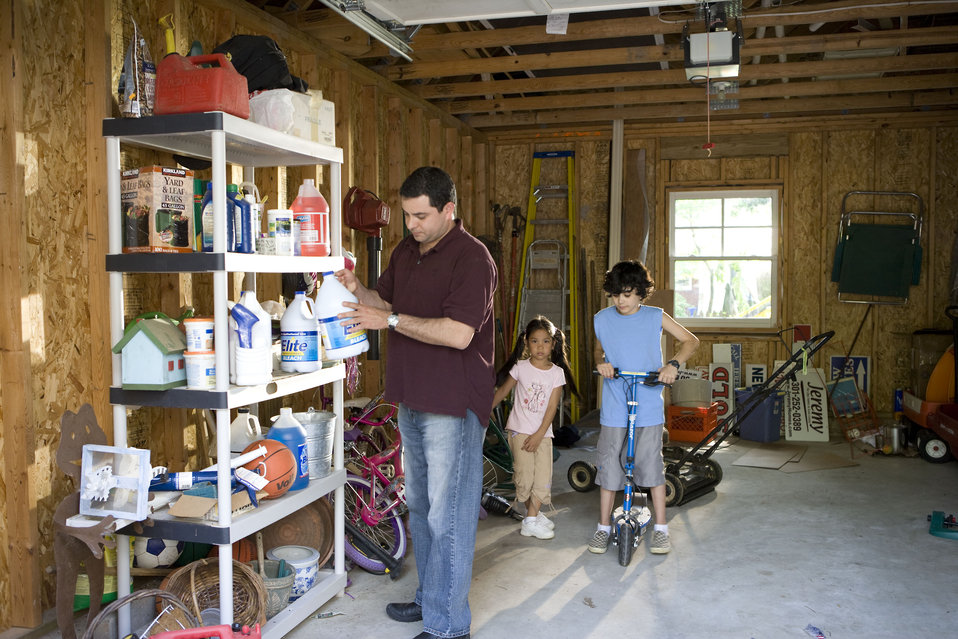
Here we see a father organizing his garage contents, while two of his children entertained themselves with some of the playthings stored inside.